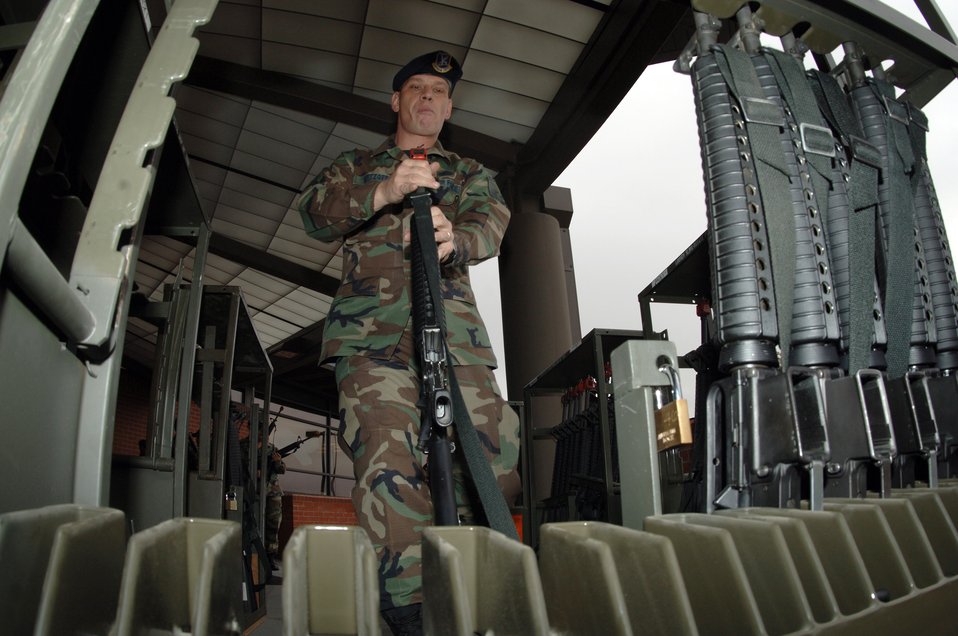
M-16 rack

FAIRCHILD AIR FORCE BASE, Wash. (AFPN) -- Master Sgt. Joseph Metzger racks an M-16 after a combat skills training class. The base was the first to host the training held during the second week of November. Sergeant Metzger is the noncommissioned officer in charge of the 92nd Security Forces Squadron.